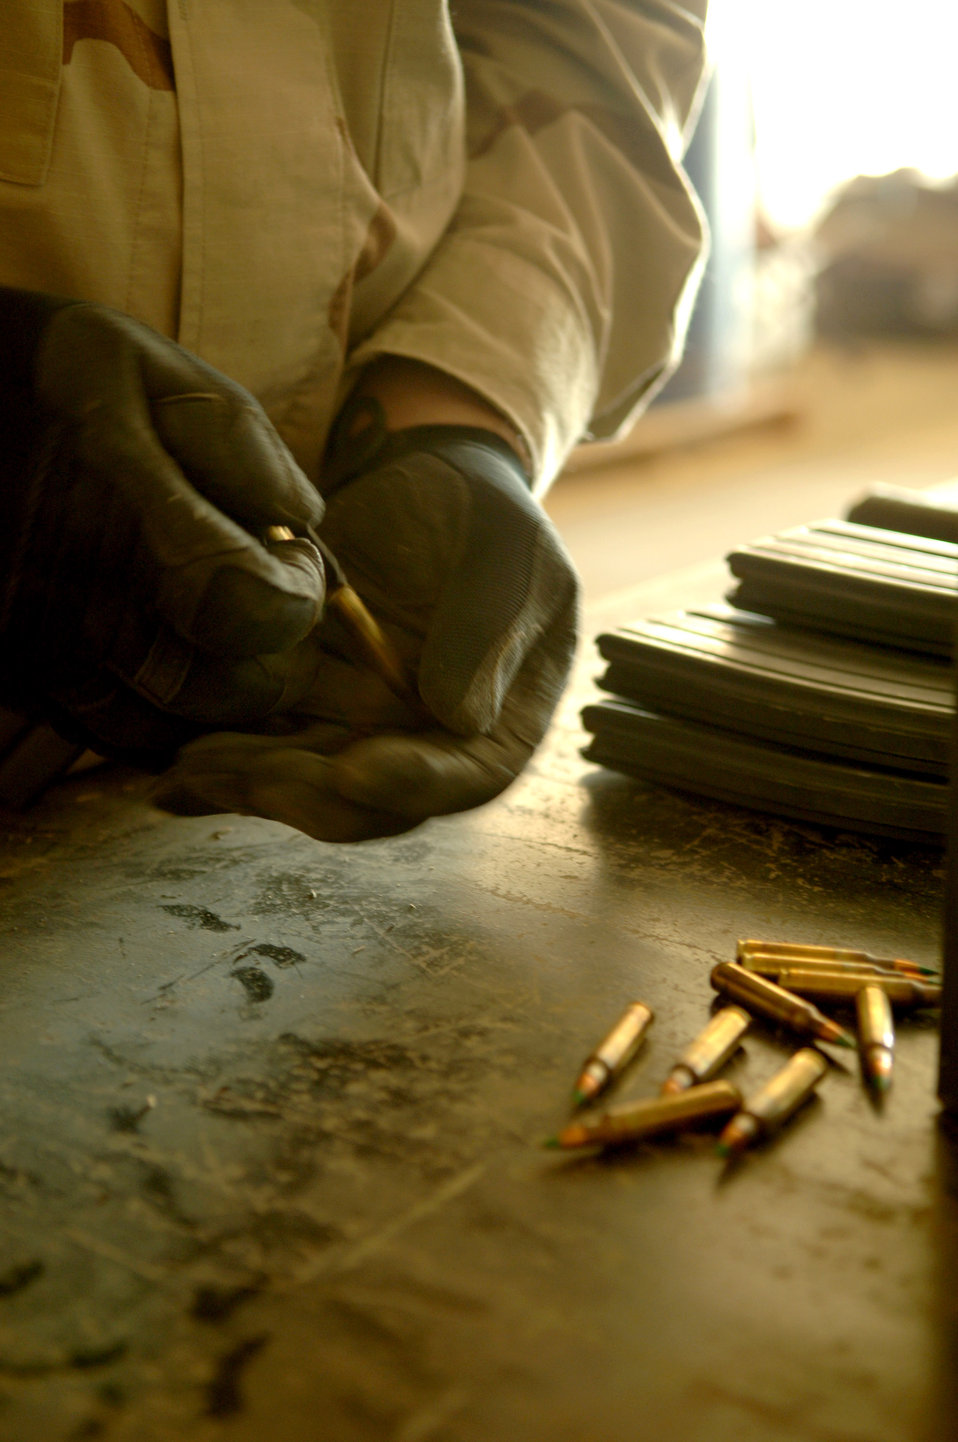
Putting steel on target

Staff Sgt. Kevin Lobstein inspects a magazine of 5.56 mm rounds for an M-16 assault rifle Nov. 29 at Balad Air Base, Iraq. Sergeant Lobstein is assigned to the 332nd Expeditionary Maintenance Squadron Ammunition Flight and is deployed out of Cannon Air Force Base, N.M.